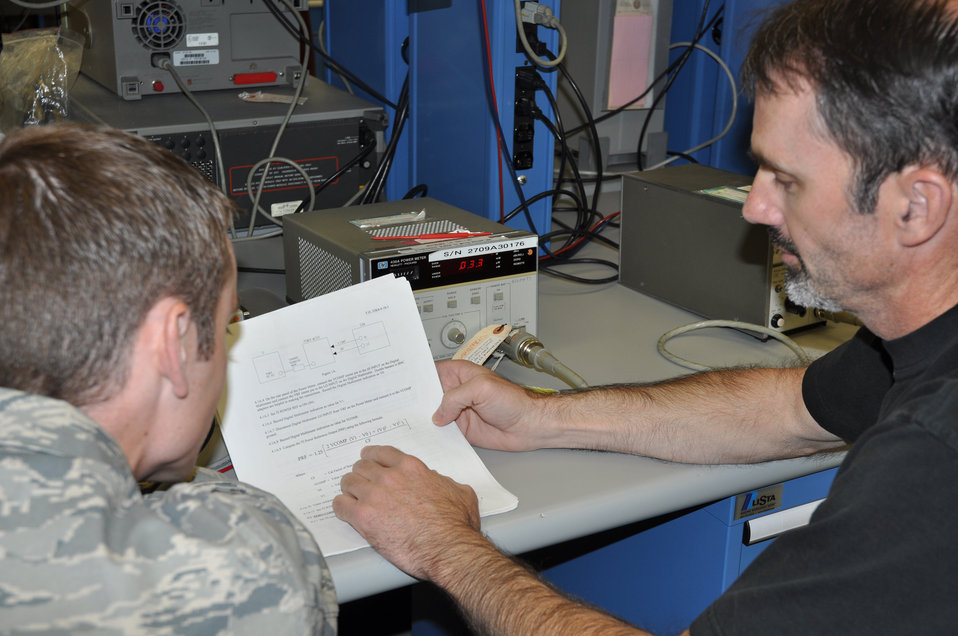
Precision: Everyday standard at base lab

Eric Miller (right) assists Senior Airman Nathan Flannery with researching a technical order procedure for calibrating a radio frequency generator. Mr. Miller and Airman Flannery are Precision Measurement Equipment Lab technicians in the 46th Maintenance Squadron at Eglin Air Force Base, Fla. The Eglin PMEL is responsible for more than 22,000 pieces of equipment assigned to 406 accounts.